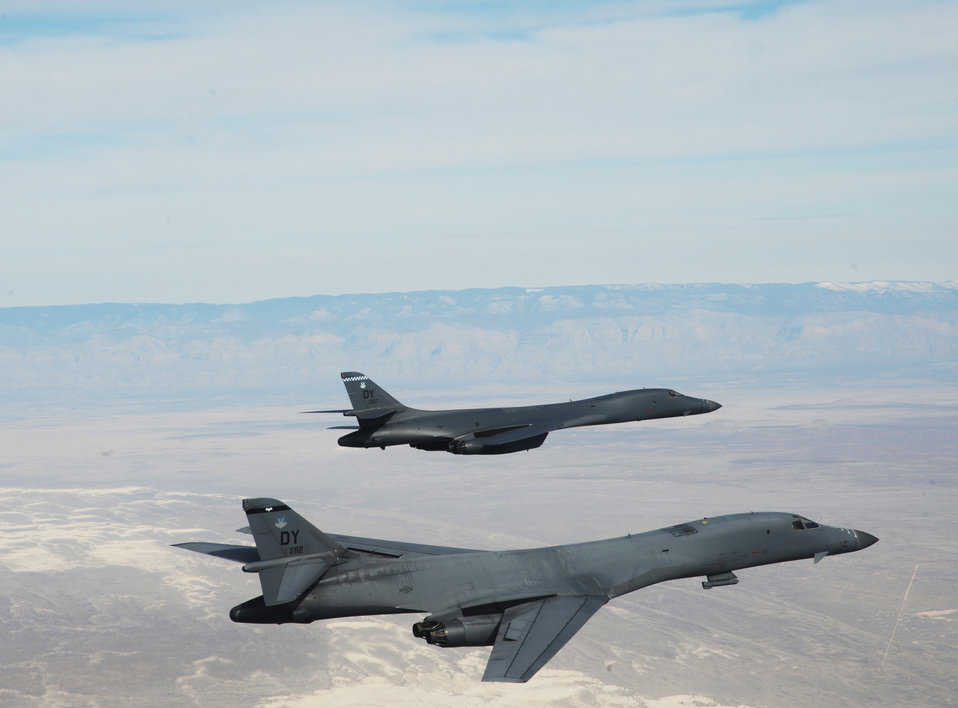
B1-B Training Mission

A two-ship formation of B-1B Lancers assigned to the 28th Bomb Squadron, Dyess Air Force Base, Texas, fly in formation over New Mexico during a training mission Feb. 24, 2010. Dyess celebrates the 25th anniversary of the first B-1B bomber arriving at the base.